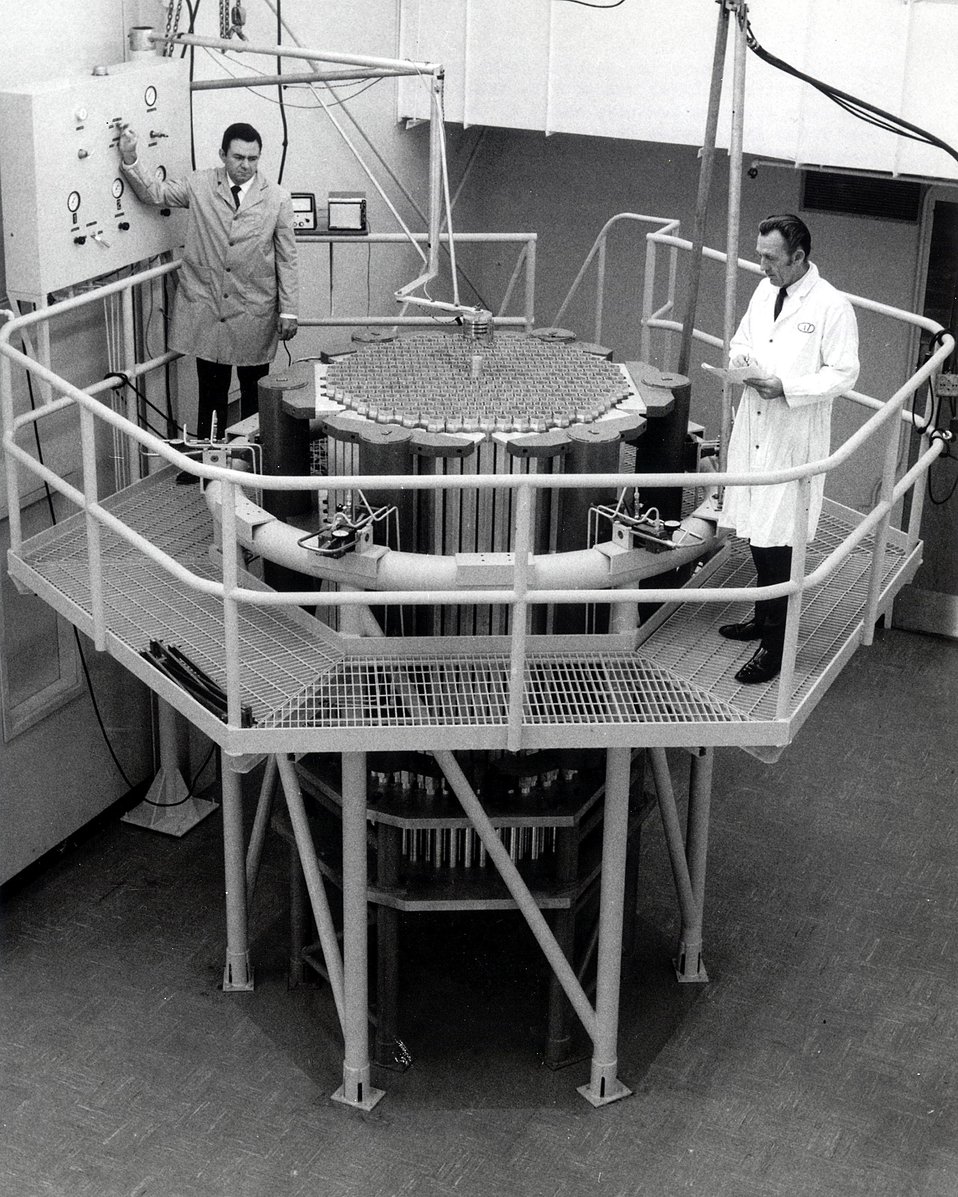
Important test information on mechanical core characteristics of LMFBR reactors is being provided by the core clamping facility built at the AEC's Liquid Metal Engineering Center in the Santa Susana Mountains, near Canoga Park, California. Circa 1973.